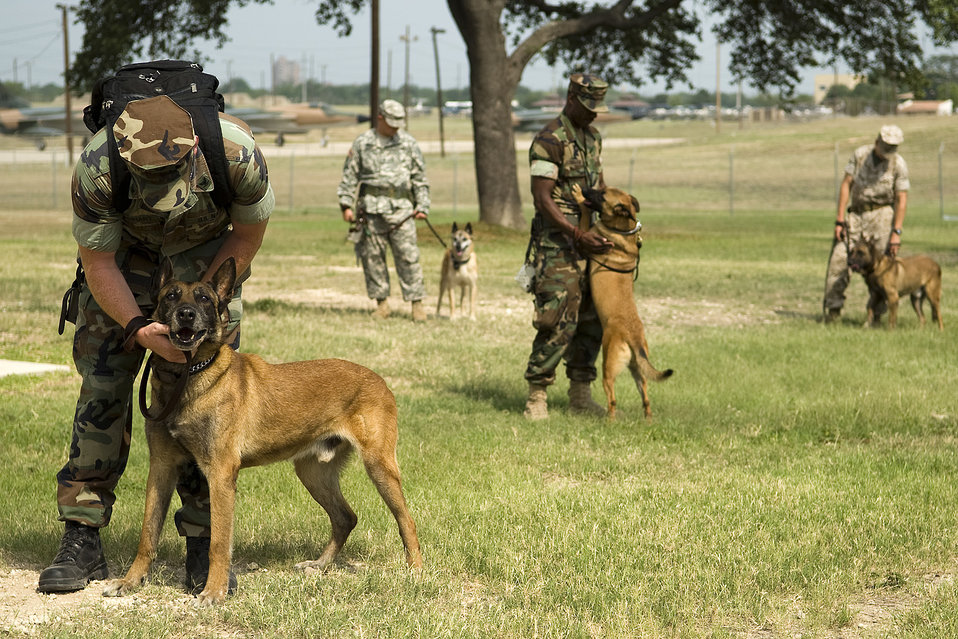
Training for military working dogs

Dog handlers wait patiently with their working dogs before participating in a series of tests determining the handlers control on a working environment on Lackland Air Force Base, Texas. Military working dogs are enrolled in a 60- to 90-day training program where they are taught to detect explosives and drugs. They are also taught deterrence training and how to protect their handler.